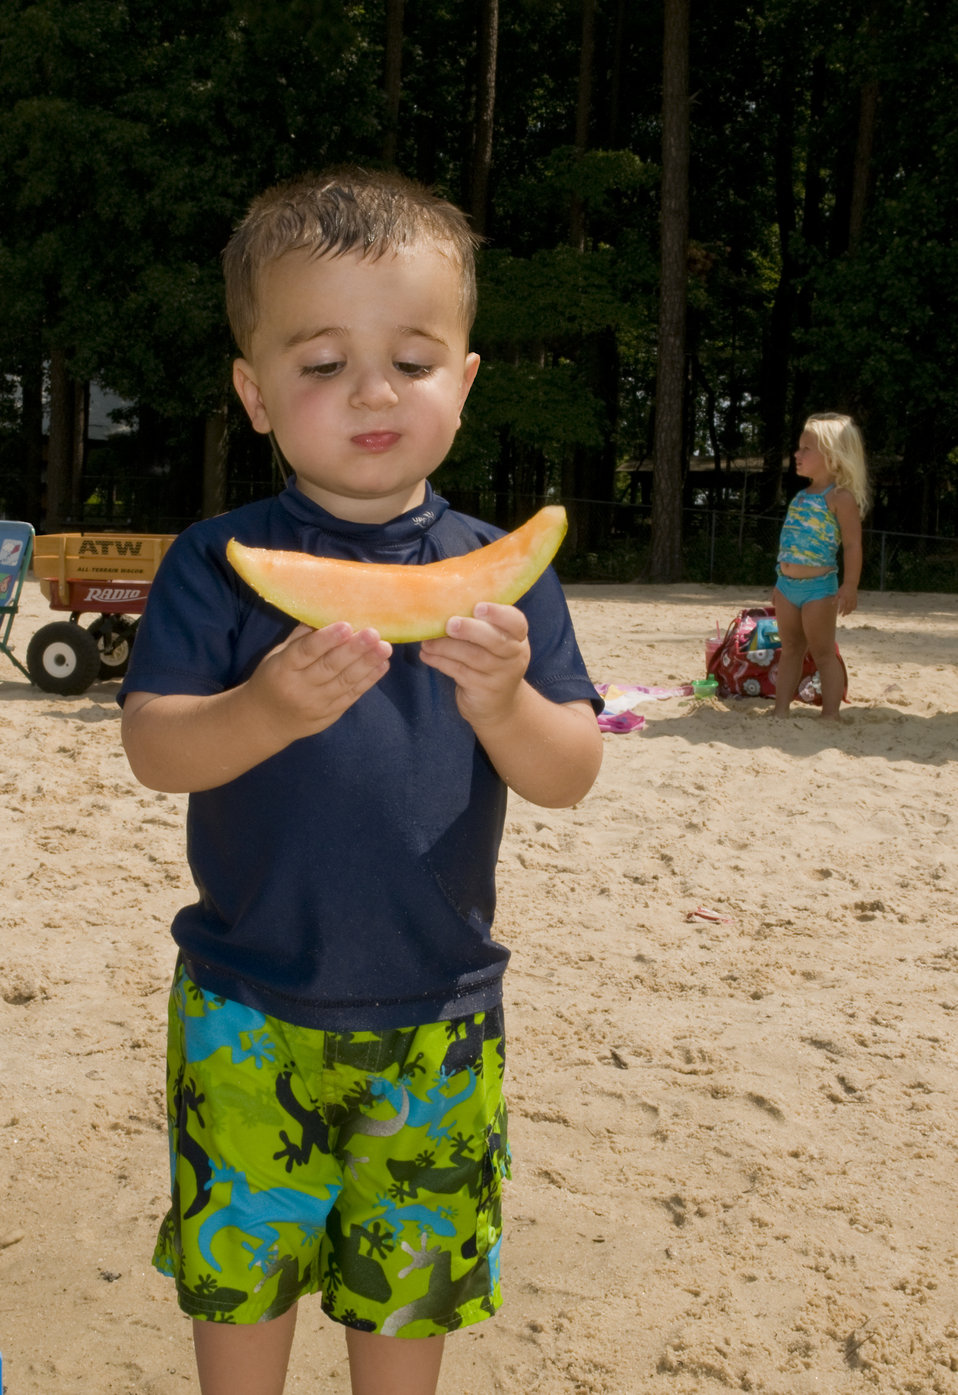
During this young boy's day out to the lake with his family and playthings, he was pictured here holding a slice of cantaloupe with both his hands while standing on the beach sand. Just as important as his healthy food choice were his garments, which included a darkly-colored shirt that was able to shield him from the sun's harmful ultraviolet rays. Hopefully, his exposed skin was protected by the application of sunscreen, as well.